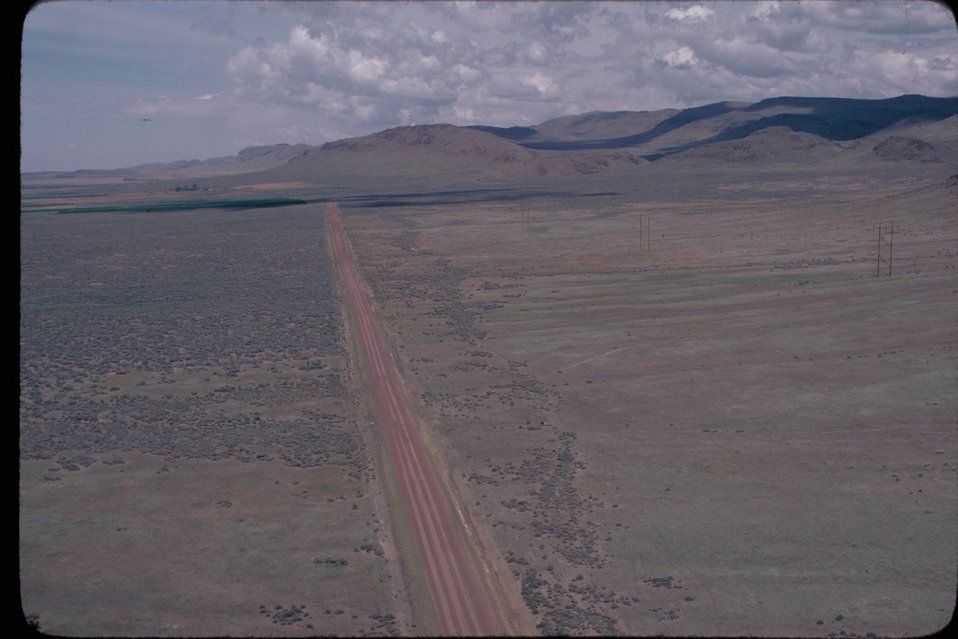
Oregon Trail west of Teapot Dome Lower Snake River District